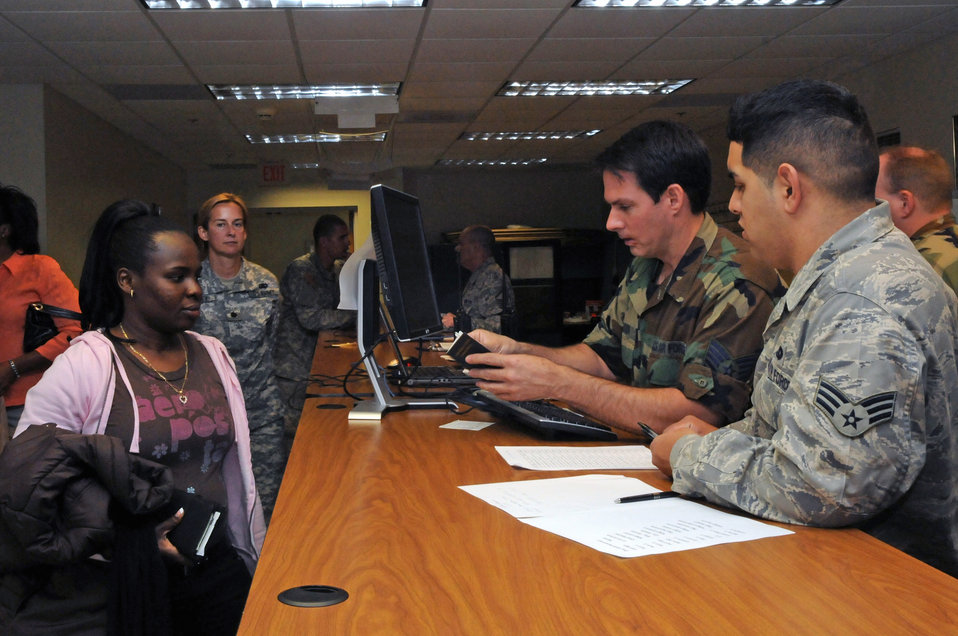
U.S. military helps Haitian students return home

Tech. Sgt. Robert Gibson and Senior Airman Carlos Ramos ready Nadia Jean-Lois of the Haitian coast guard for her flight to Haiti in support of Operation Unified Response Jan. 23, 2010, at Homestead Air Reserve Base, Fla. Sergeant Gibson and Airman Ramos are 70th Aerial Port Squadron passenger terminal representatives.